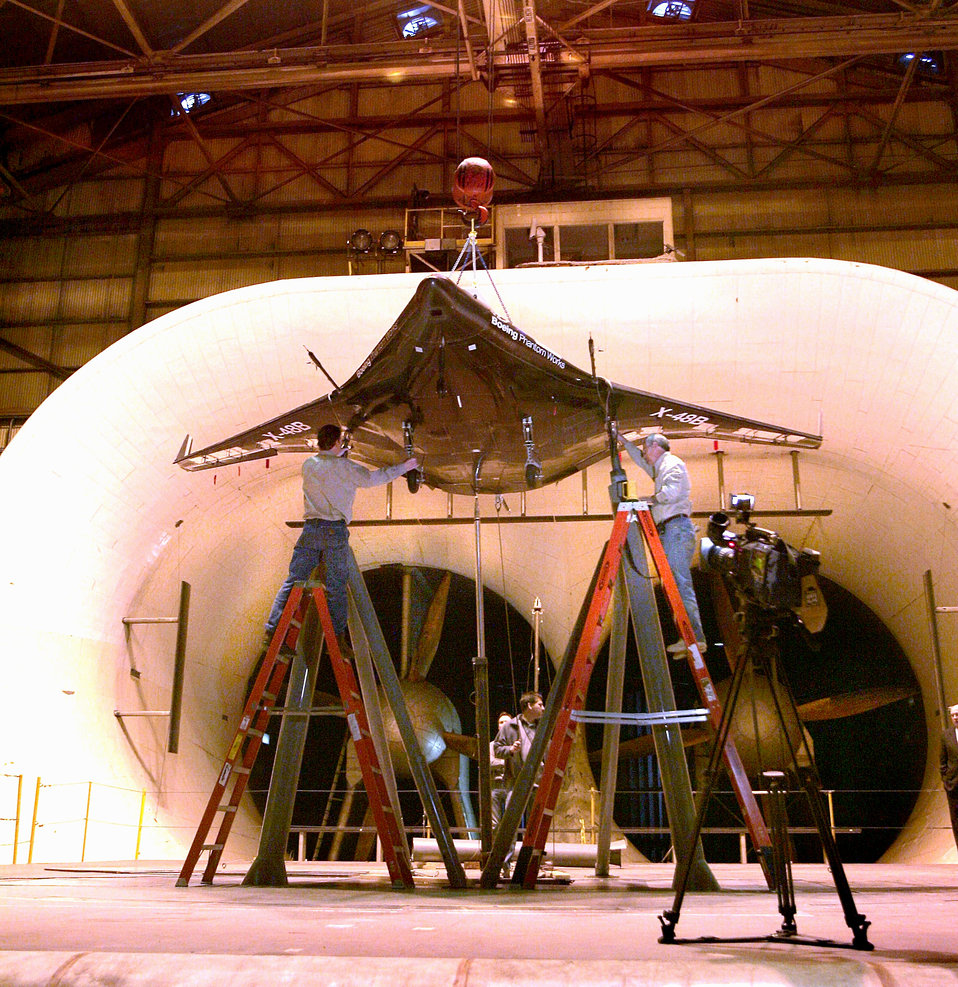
Research lab tests fuel-efficient, flying-wing aircraft

Technicians from Boeing, the National Aeronautics and Space Administration and Cranfield Aerospace complete installation of the first X-48B research aircraft at the full scale wind tunnel at NASA's research center at Langley Air Force Base, Va.